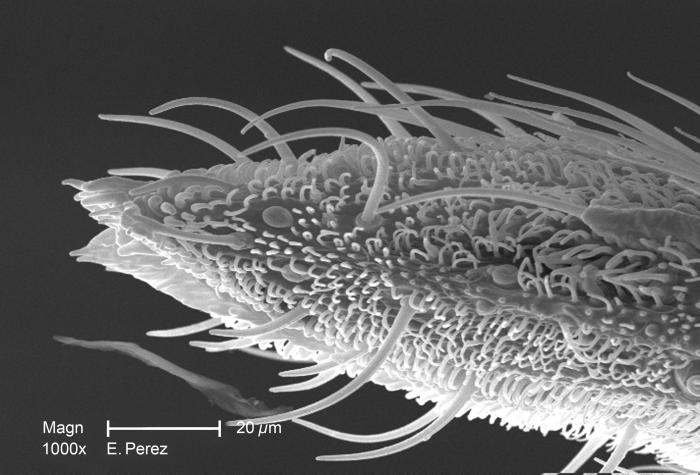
At a magnification of 1000X, twice that of PHIL 10557, this scanning electron micrograph (SEM) revealed some of the minute exoskeletal details found at the proboscis tip of an unidentified mosquito found deceased in the suburbs of Decatur, Georgia. The proboscis is the organ used by this, as well as other like insects, to feed upon the blood of a warm-blooded host, including human beings. What you see here, is the sheath that encases a pair of needle-sharp "stylets", which together are known as the "fascicle". The larger of the two stylets, known as the "labrum", when viewed in cross-section, takes on the shape of a "V", and acts as a gutter, which directs the ingested host blood towards the insect's mouth. The 'hair-like' structures are known as "setae", and are really extensions of the insect's exoskeletal, chitinous covering. These setae act as sensory organs, transmitting impulses indicating changes in the organism's environment.